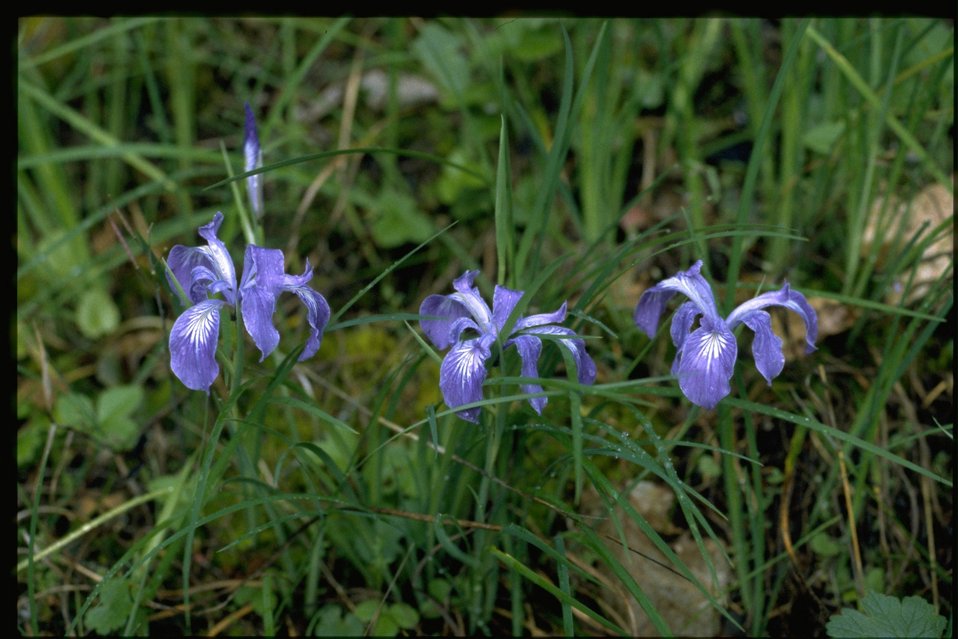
Medium shot of Iris tenax.